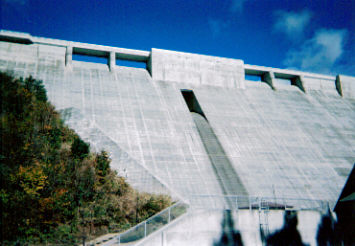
Dam